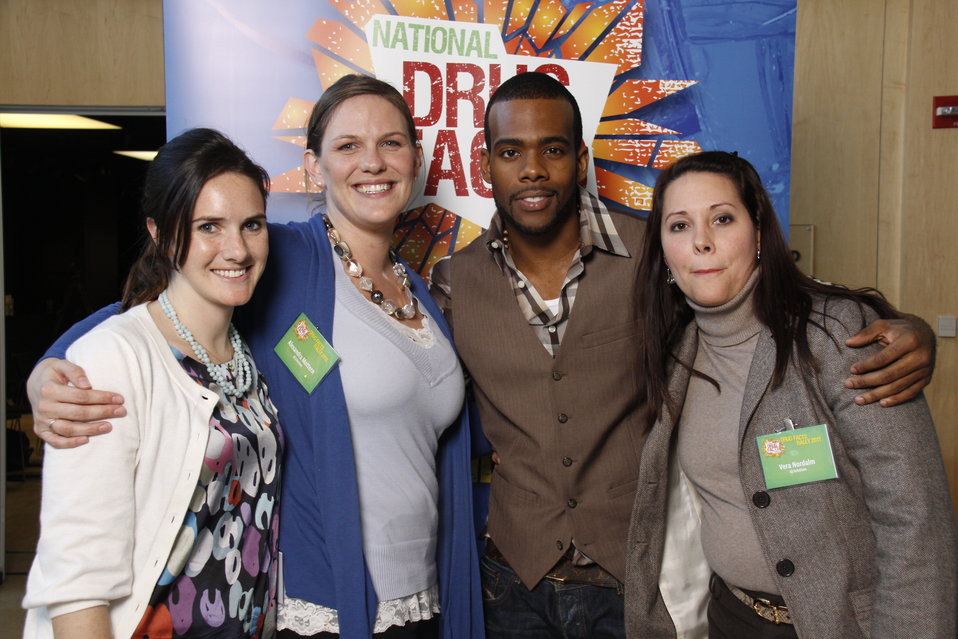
NDFW Mentor Event